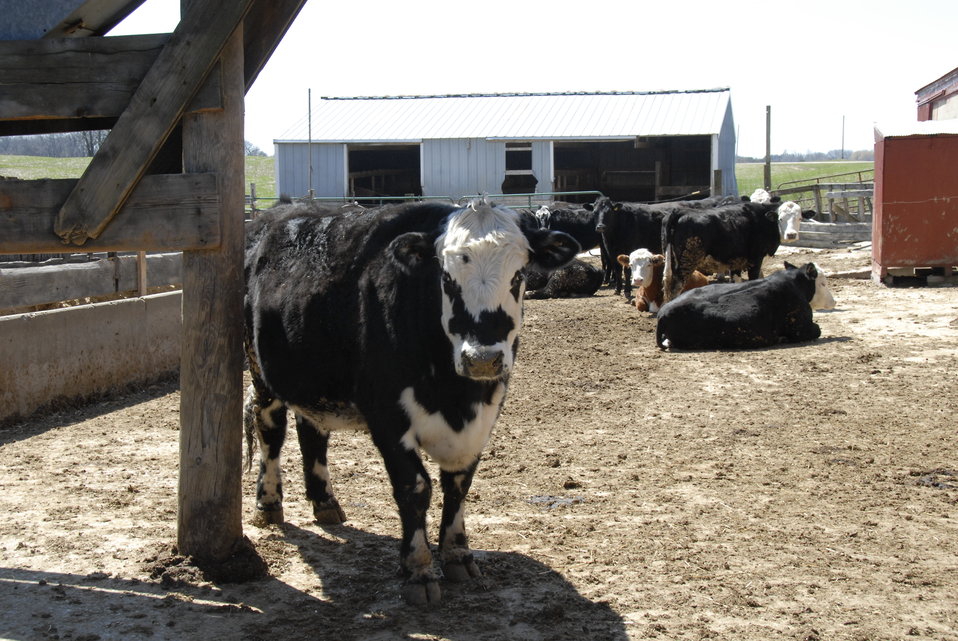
Beef cattle graze in an enclosed area on the Gehrke farm in Elgin, Illinois on April 5, 2008.